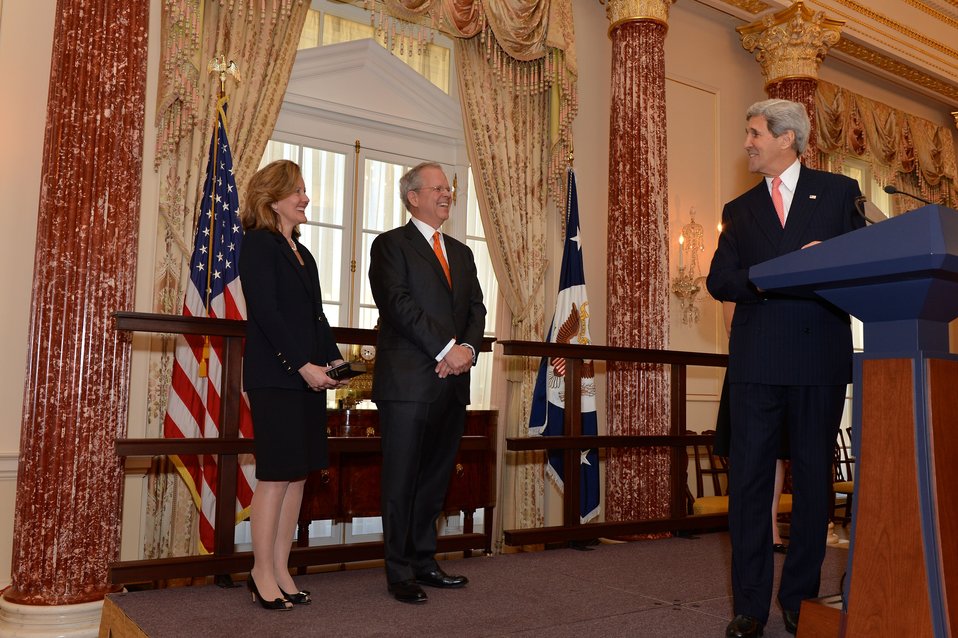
Secretary Kerry Delivers Remarks at Ambassador Broas' Swearing-In Ceremony

U.S. Secretary of State John Kerry hosts a swearing-in ceremony for U.S. Ambassador to the Netherlands Tim Broas at the U.S. Department of State in Washington, D.C., on April 10, 2014.